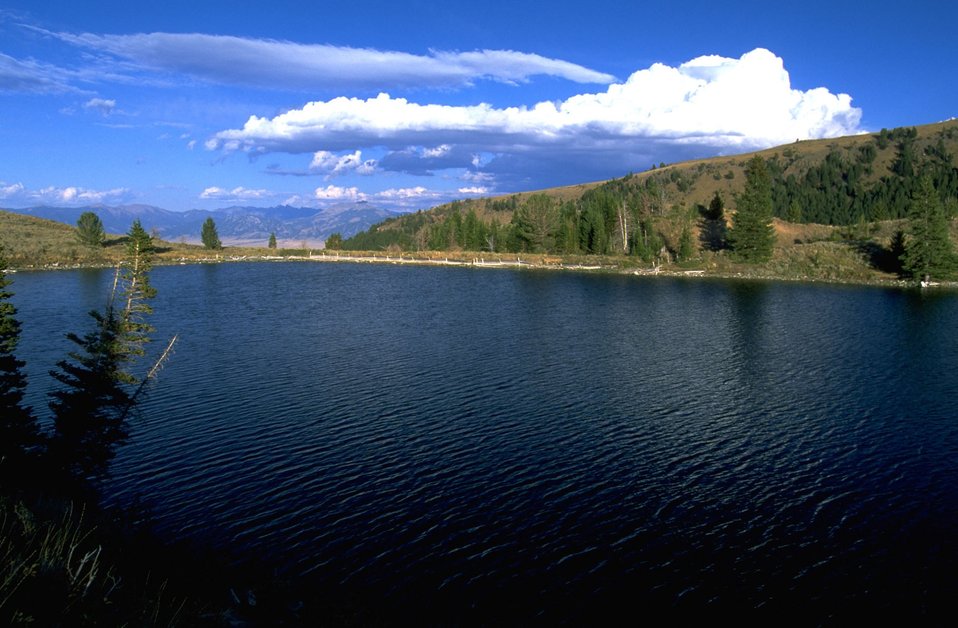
Axolotl Lake with Spanish Peaks in the background